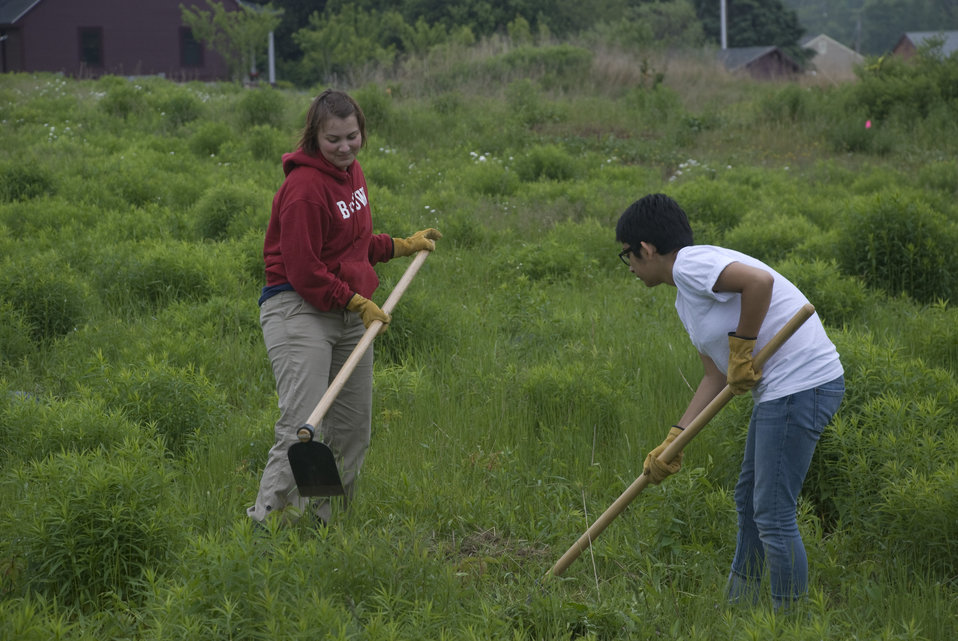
Rachel Carson Natl Wildlife Refuge, ME